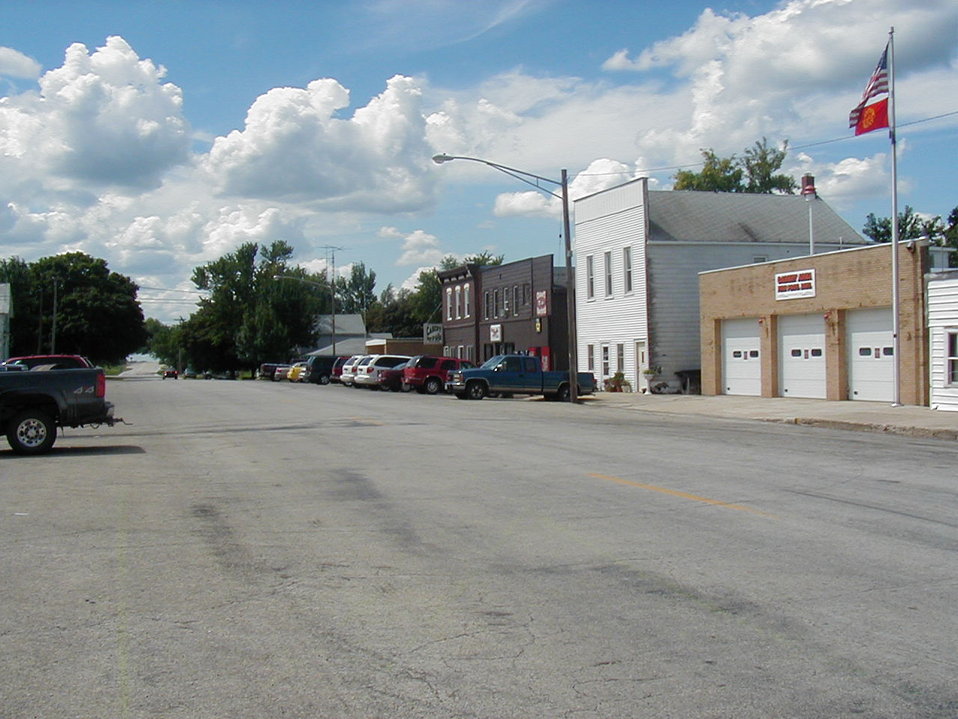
Picture of the main street of Cabery Illinois on a Saturday afternoon.